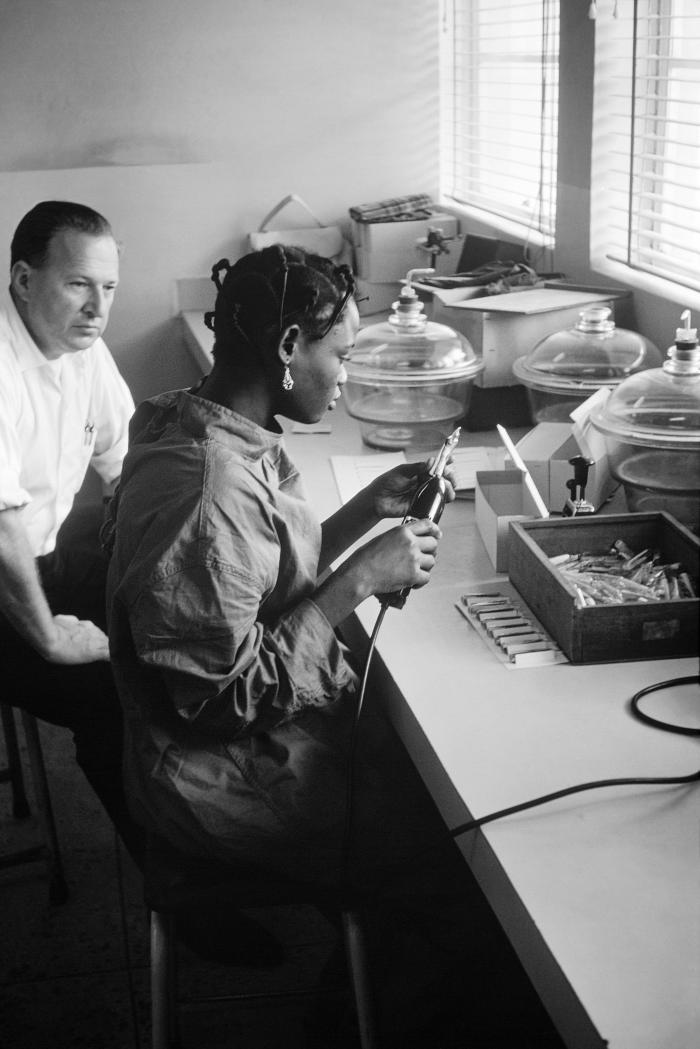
This 1967 photograph depicts Smallpox Eradication Program, microbiologist/virologist, Nathaniel Rothstein seated at left, while he was observing a laboratory technician, as she was testing newly-processed smallpox vaccine vials, which contained freshly-processed freeze-dried, or lyophilized, vaccine. This lab was located in a suburb of Lagos, Nigeria known as Yaba, during that country's smallpox immunization campaign of the 1960s and 1970s.